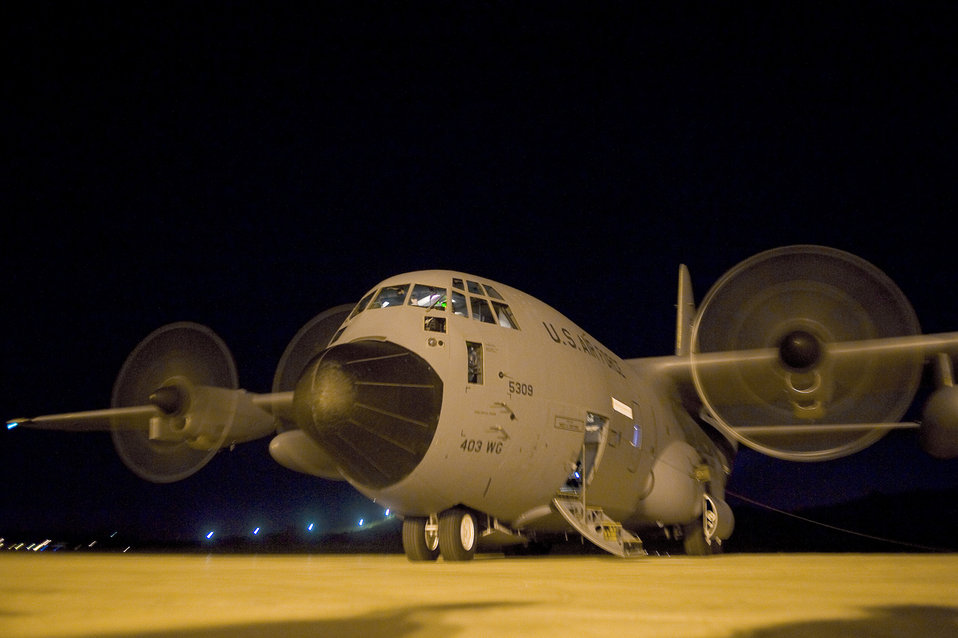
Hurricane hunters on Igor

Airmen prepare a WC-130J Hercules for a mission to collect data on Hurricane Igor Sept. 17, 2010, on St. Croix, Virgin Islands. Known as the